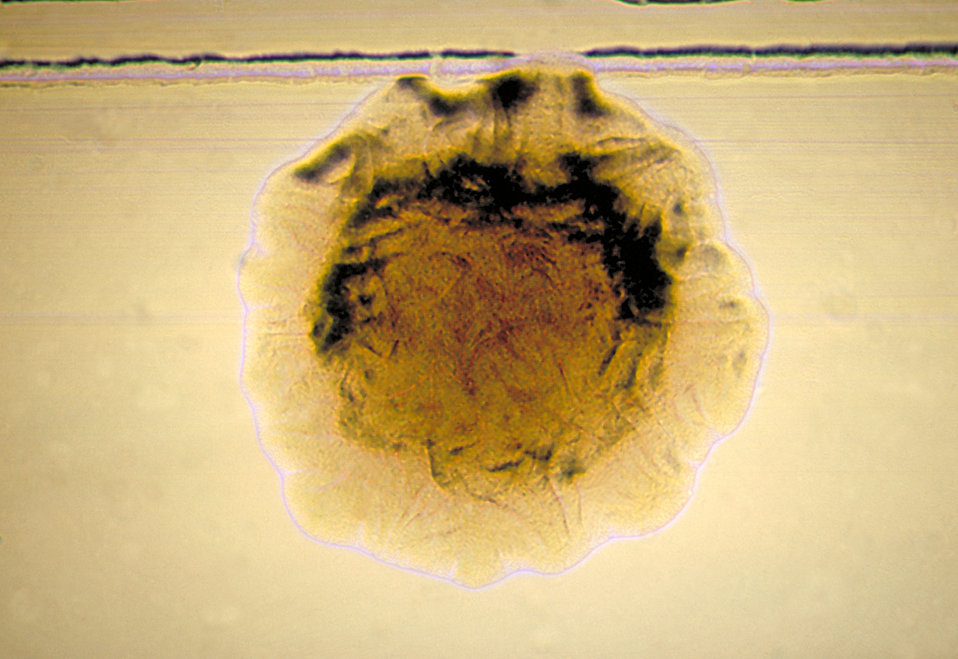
This image shows a BHI (Brain Heart Infusion) agar culture growing Leptotrichia buccalis bacteria on day 3.